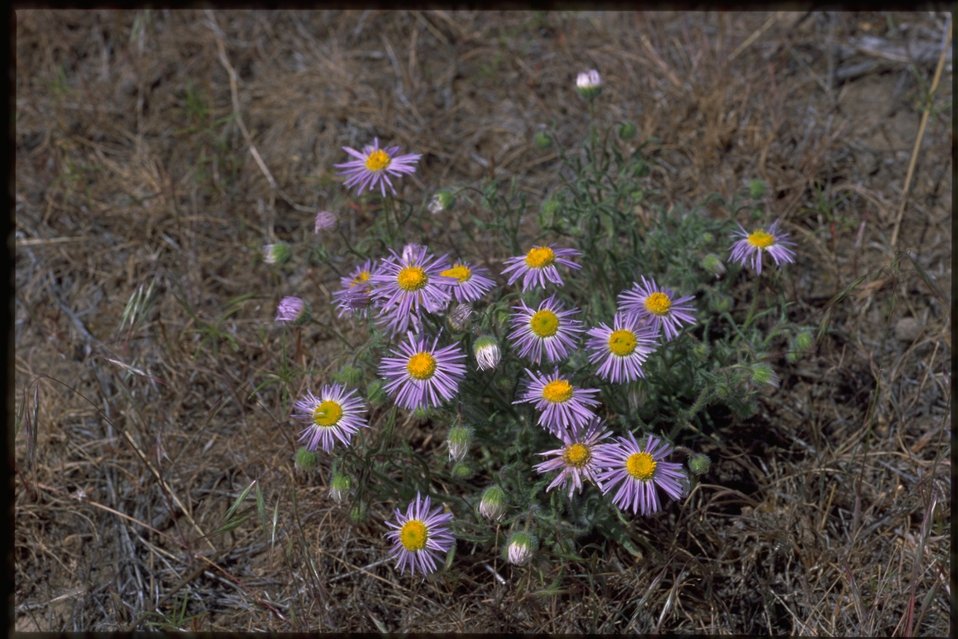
Farshot of Asteraceae.